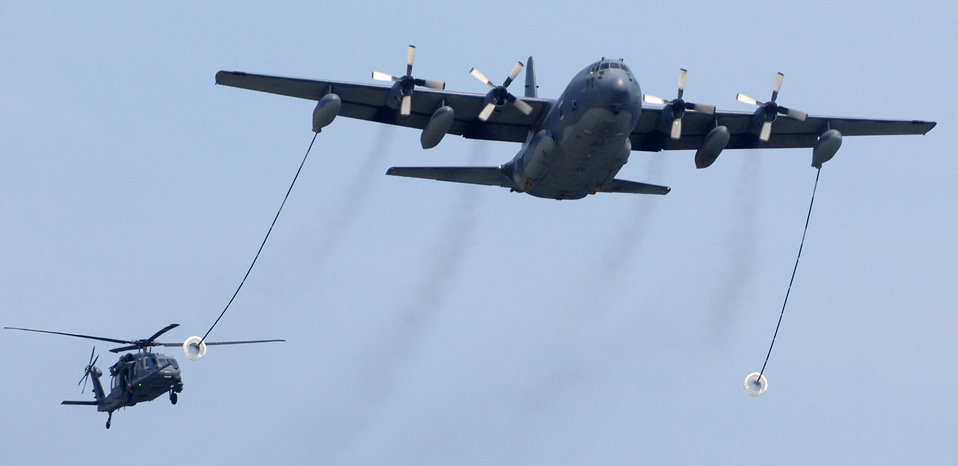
Fill me up!

An HC-130 refuels a HH-60 Pave Hawk helicopter to show how a refueling keeps the helicopter aloft during the Jones Beach Air Show May 23 and 24 at Jones Beach State Park in Wantaugh, N.Y. The 106th Rescue Wing demonstrated how they perform different rescue operations during the air show.